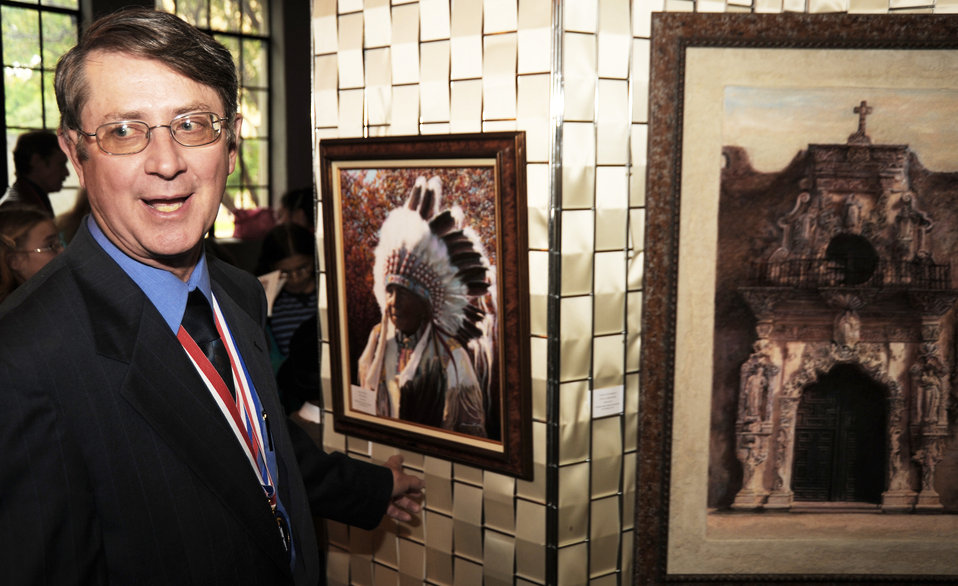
Veterans show true colors

Retired Air Force Lt. Col. Dennis Linn displays his artwork during the 2009 National Veterans Creative Arts Festival Oct. 11, 2009, at the San Antonio Municipal Auditorium in San Antonio. Colonel Linn created an acrylic painting of is friend, Lakota Chief David Bald Eagle.